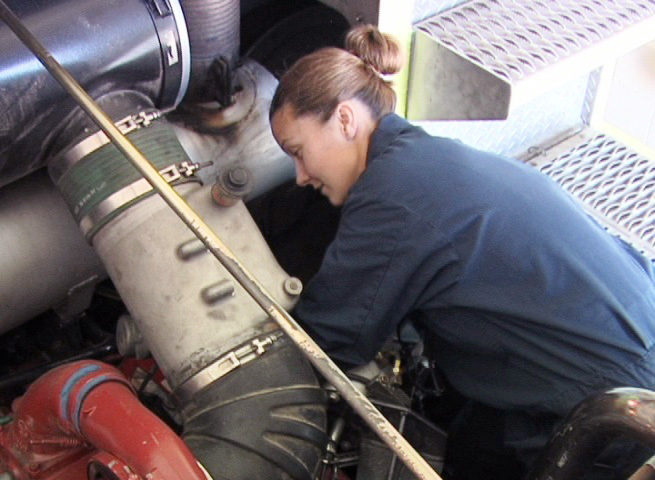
Altus Airmen honor women of past, look to future

Staff Sgt. Amy Chandler inspects the engine of a P-23 fire truck March 18 at Altus Air Force Base, Okla. Sergeant Chandler maintains the wing's fleet of structural and crash firetrucks, ensuring emergency responders are equipped to handle any situation. She is assigned to the 97th Logistics Readiness Squadron.